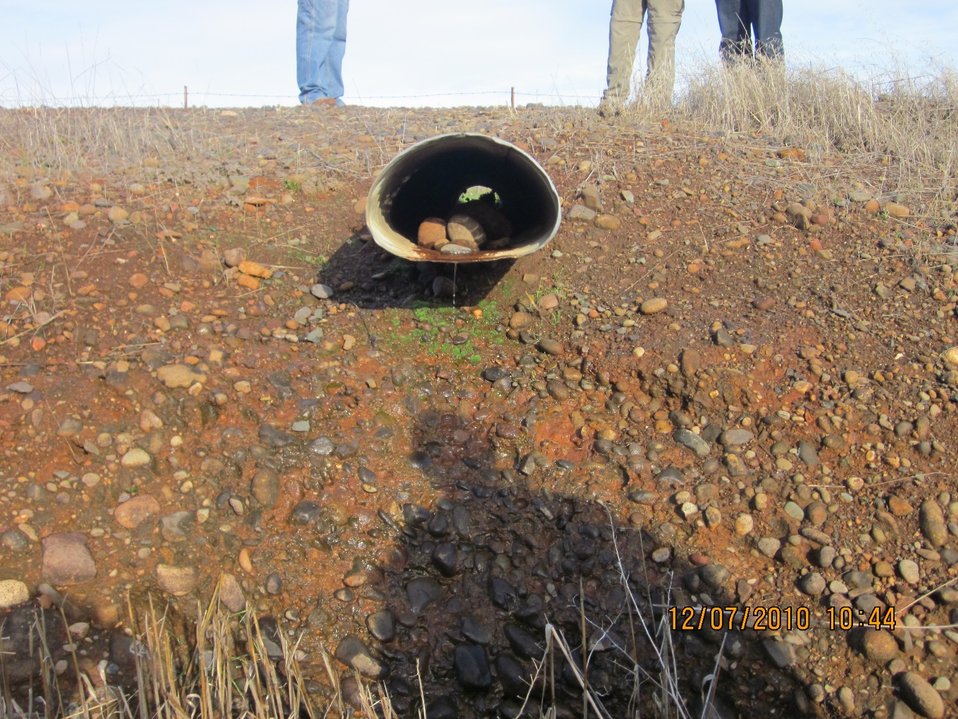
Open pipe in a Chico-area levee

A pipe provides a path for water through a levee in the Chico, Calif., area, shown during a levee inspection in December 2010. The U.S. Army Corps of Engineers inspects levees in its Rehabilitation and Inspection Program to ensure levees don’t pose an unacceptable risk to lives and to provide levee managers and residents with detailed information on the condition of levees to help them make informed decisions about safety.